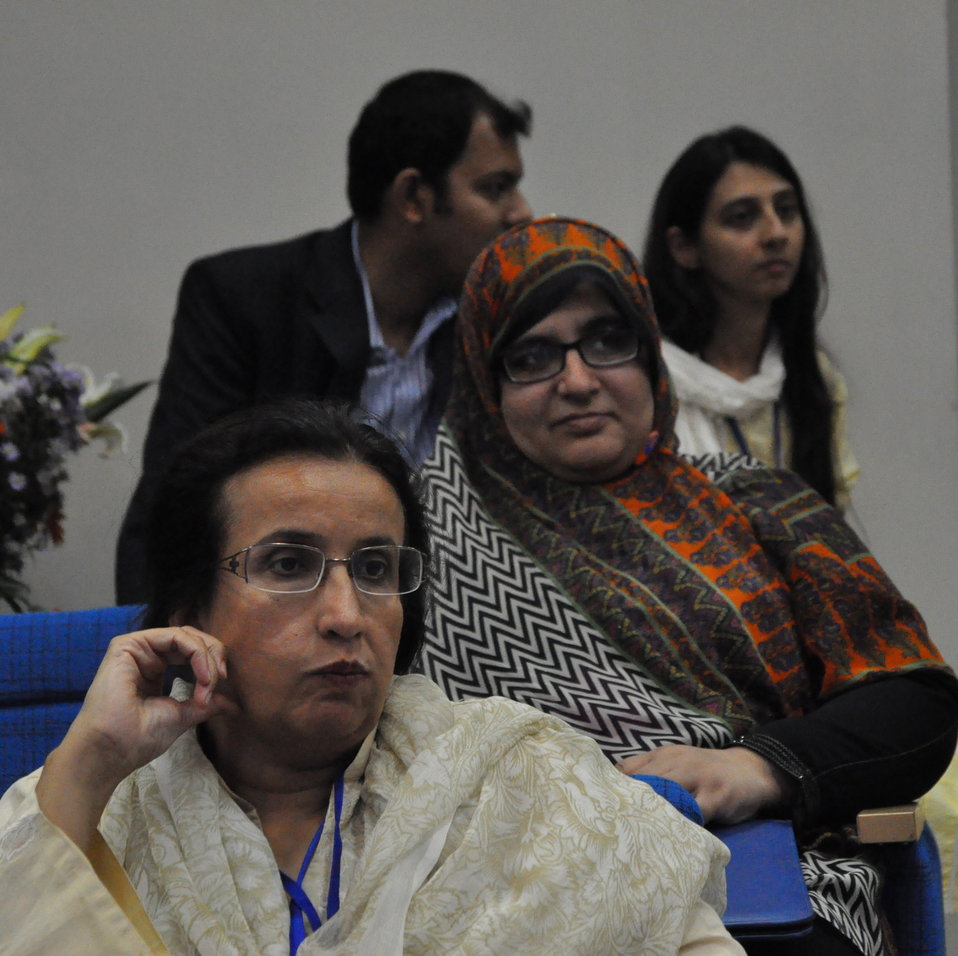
Participants at the conference